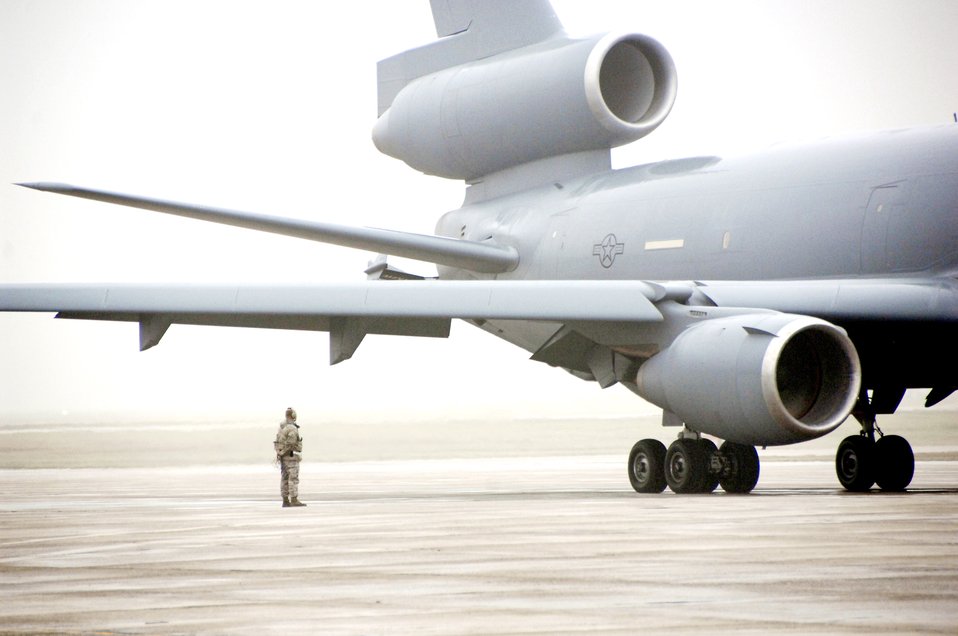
So long, big fella

A KC-10 Extender prepares to take off Dec. 21, 2009, during a Travis Air Force Base, Calif., first mass launch of nine aircraft. The Total Force launch effort was an opportunity for operations, maintenance and support personnel to train together on a larger scale than normal.